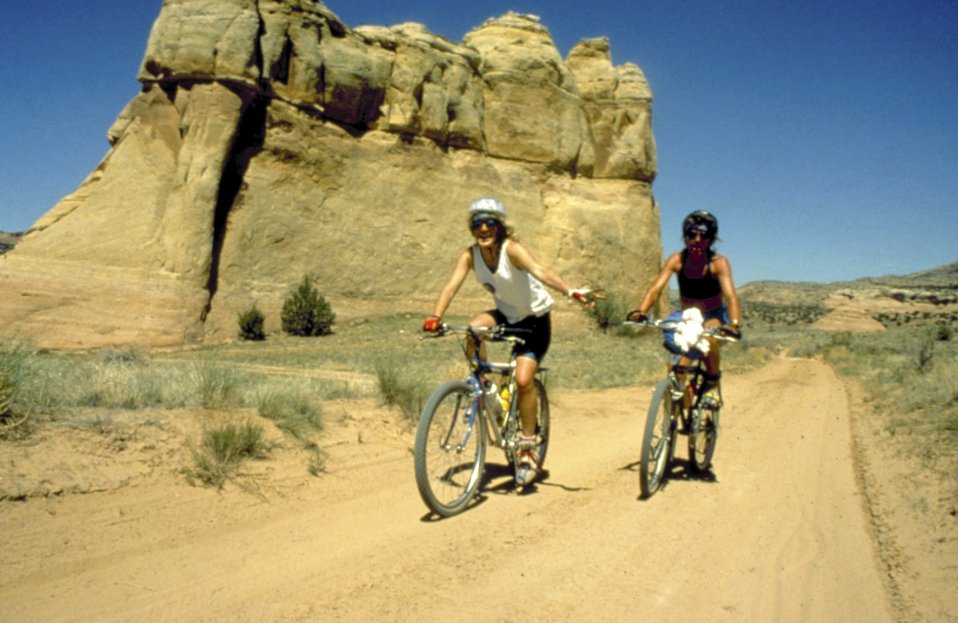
Mountain Biking on the Kokopelli Trail.